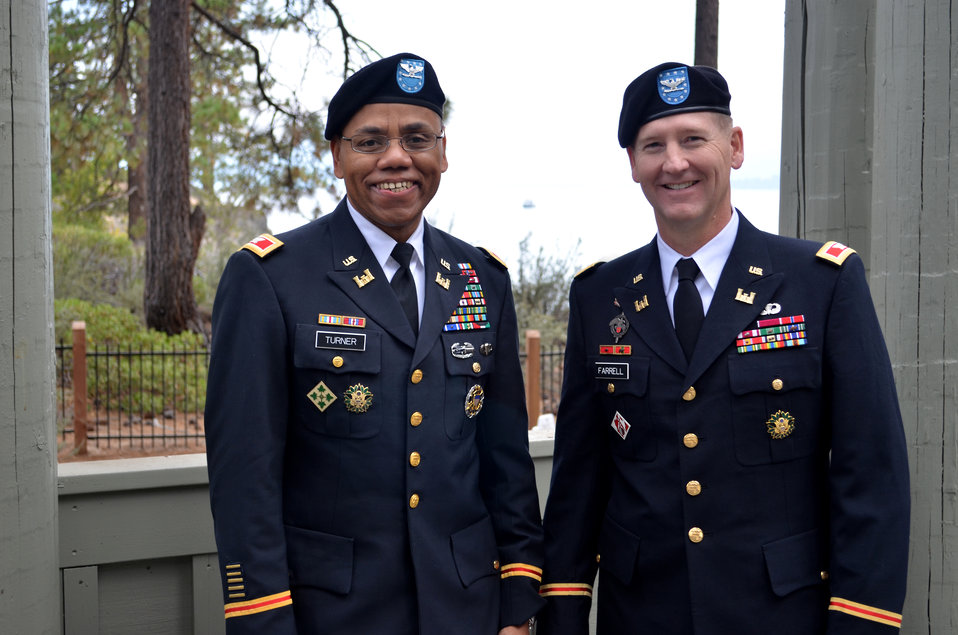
Corps commanders at Lake Tahoe Summit

130819-A-QE256-116 - Col. Dave Turner (left), commander of the U.S. Army Corps of Engineers South Pacific Division, and Col. Mike Farrell, commander of the Sacramento District, attended the 17th Annual Lake Tahoe Summit at Sand Harbor State Park, Nev. Aug. 19, 2013. The U.S. Army Corps of Engineers joined former Vice President Al Gore, U.S. Sen. Harry Reid of Nevada, U.S. Sen. Diane Feinstein of California, California Governor Jerry Brown, Nevada Governor Brian Sandoval and partner agencies to celebrate progress in restoring Lake Tahoe. The Corps is one of many agencies working to help “keep Tahoe blue” through various ecosystem restoration projects.